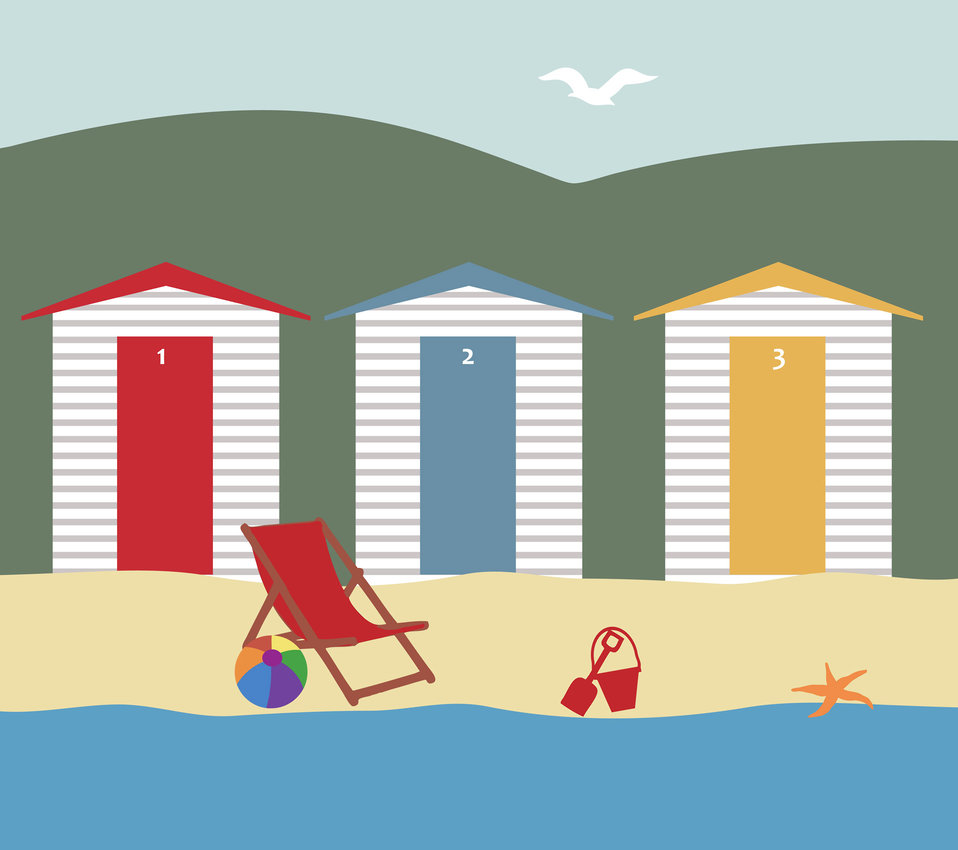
Beach holiday

Seaside beach holiday scene for scrapbooking.